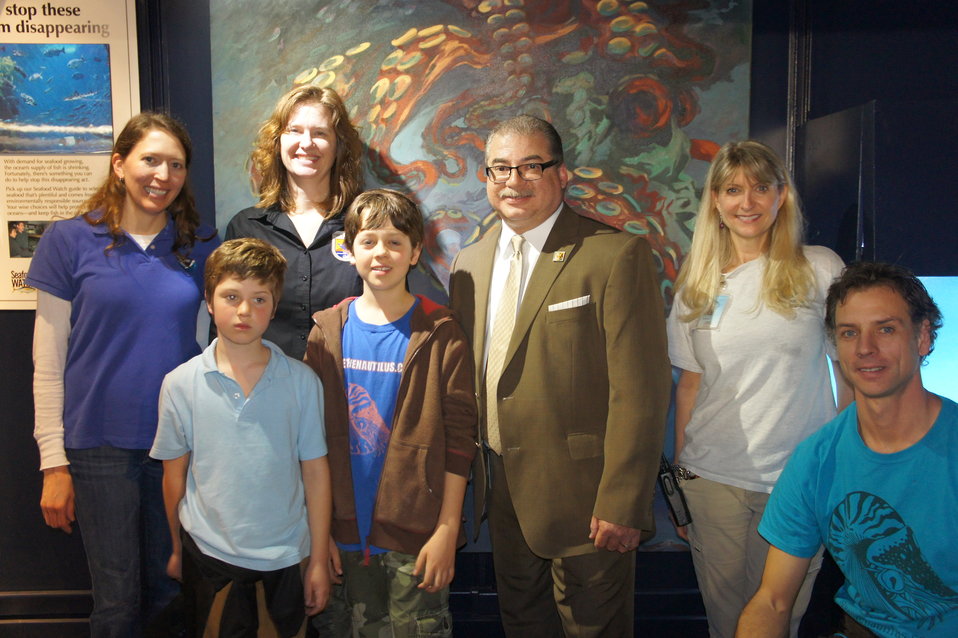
'Save the Nautilus' co-founder visits Smithsonian National Zoo

Representatives from the National Oceanic and Atmospheric Administration, the U.S. Fish & Wildlife Service, and the Smithsonian National Zoo met with Josiah Utsch, co-founder of www.savethenautilus.com, and his family to thank them for their conservation work.